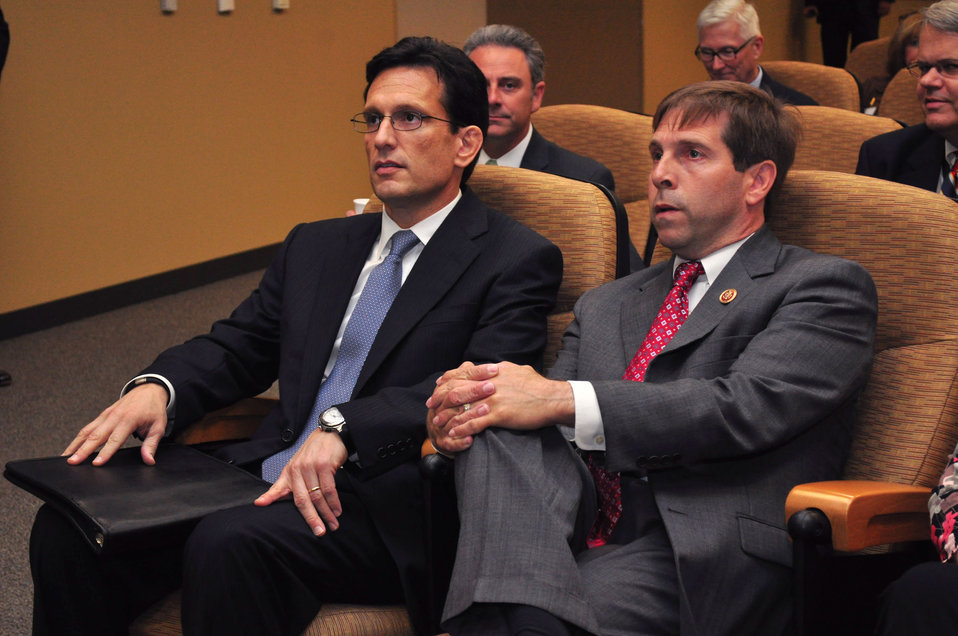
Tennessee Valley Corridor Summit Oak Ridge Congressman Eric Cantor Majority Leader and Congressman Chuck Fleischmann

13-062 DOE photo Lynn Freeny 5-29-2013 Oak Ridge Tennessee